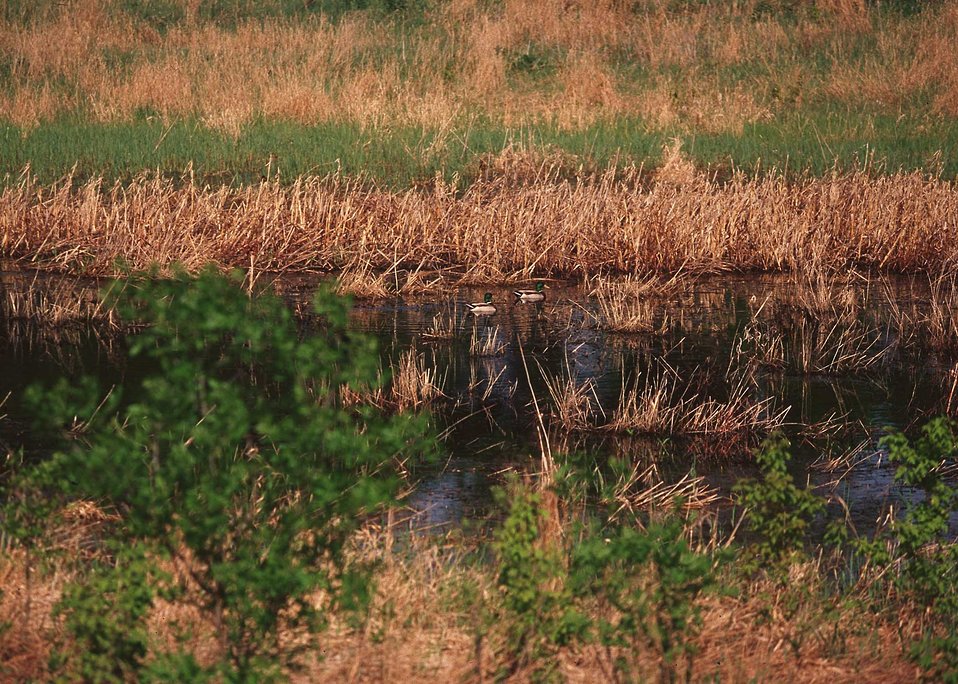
Mallard Ducks in the prairie pothole region of eastern South Dakota.